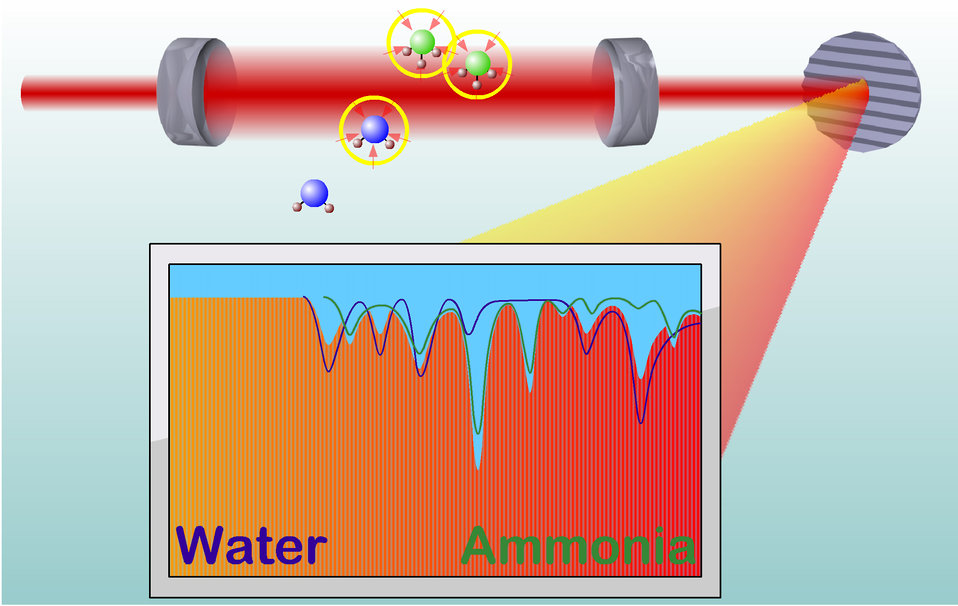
Optical Comb

The new JILA technique uses infrared laser light in many different colors, or frequencies, to identify trace levels of different molecules at the same time. For example, water molecules (blue) and ammonia molecules (green) absorb light at very specific characteristic frequencies. The pattern of frequencies absorbed forms a 'signature' for identifying the molecules and their concentrations.